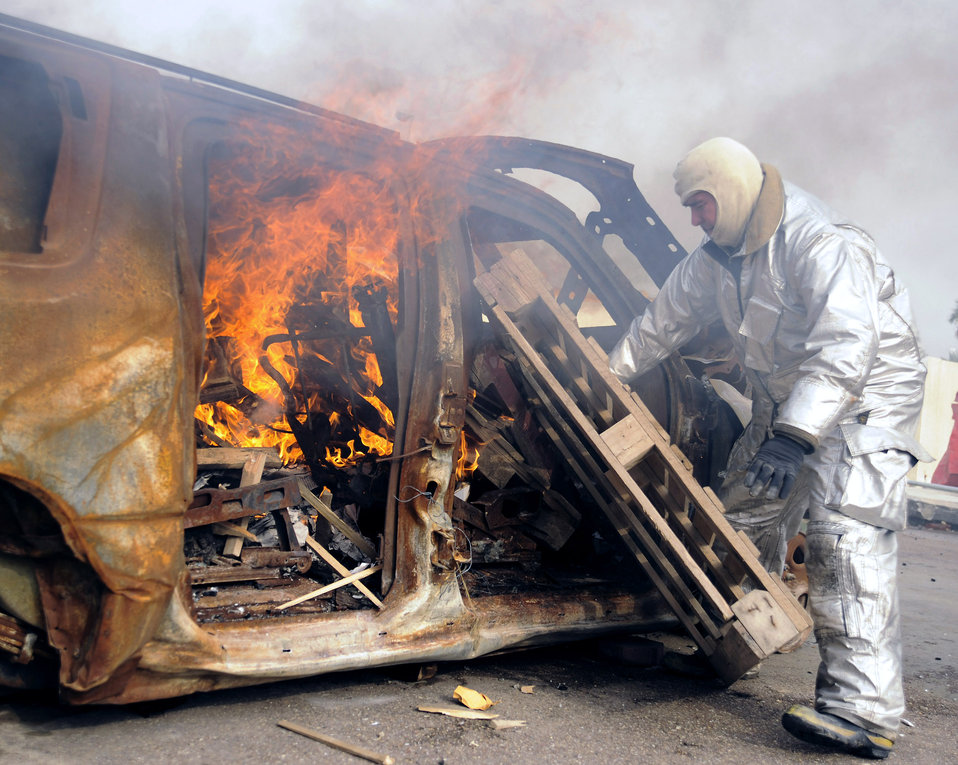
AF firefighters relocate, expand Iraqi fire training course

Master Sgt. James Brody creates a simulated car fire for a live burn exercise in Baghdad, Iraq, Dec. 24. Sergeant Brody is an assistant firefighter instructor, and is deployed from the 174th Fighter Wing, Syracuse Air National Guard, N.Y.